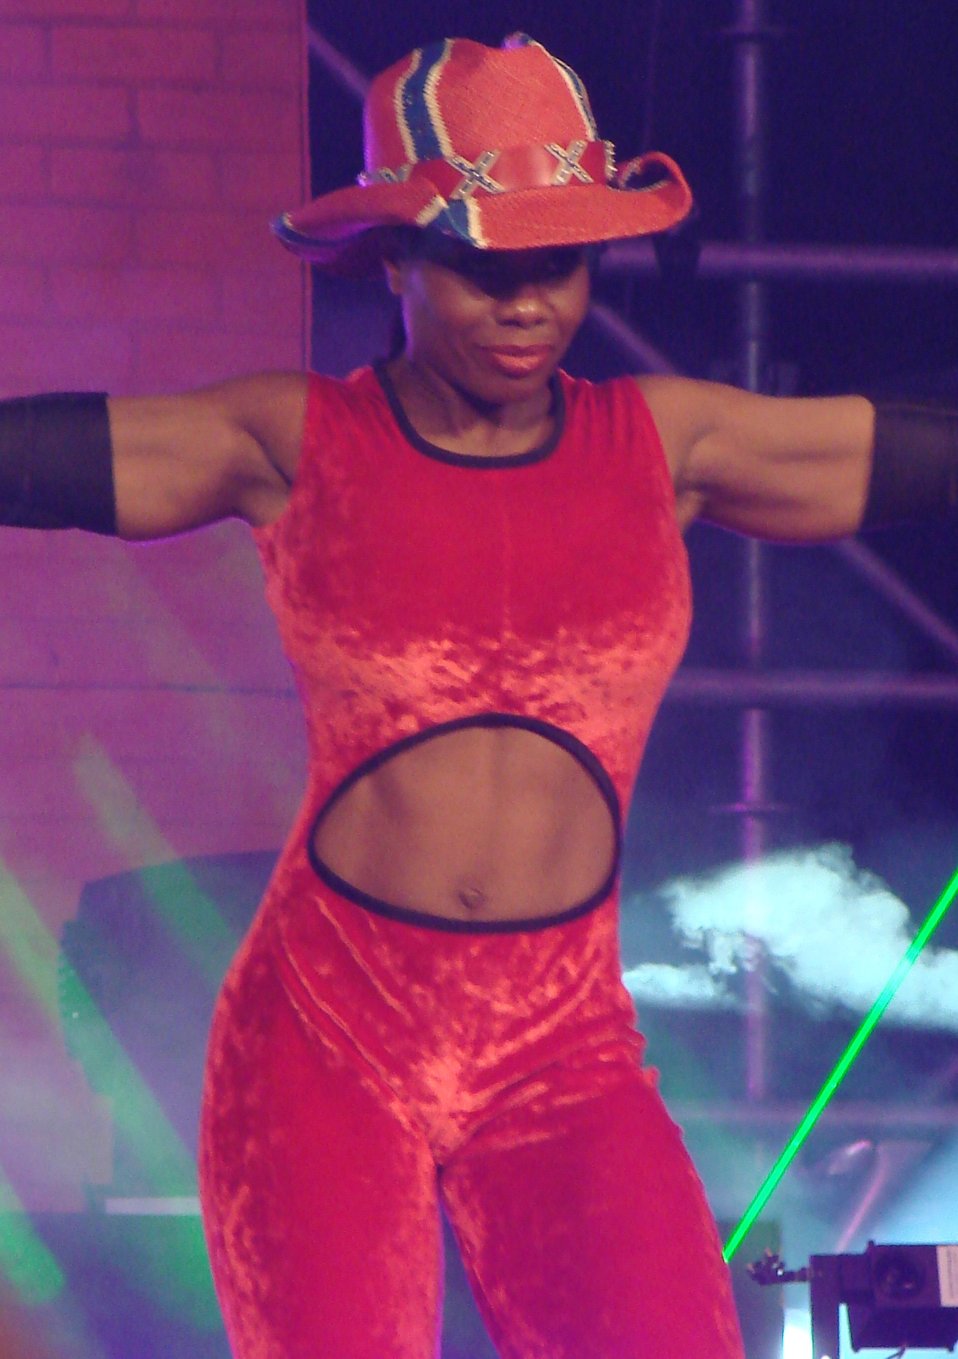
Jacqueline Moore at TNA Lockdown.
Category:Professional wrestling free use media